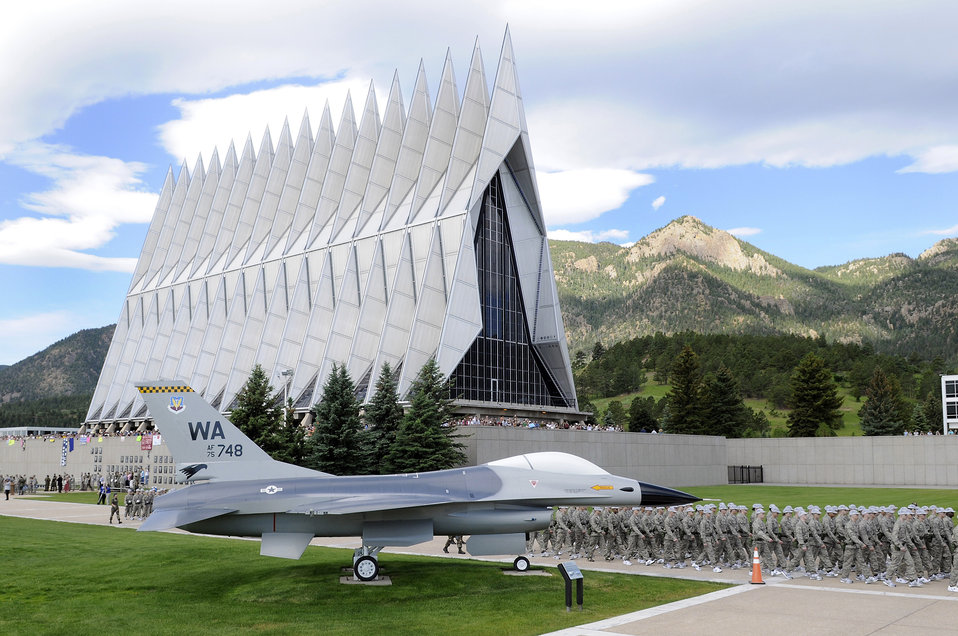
Welcome to the Academy

The 1,376 members of the Class of 2013 are dismissed after reciting the Oath of Allegiance in front of the cadet chapel, family and friends during their first formation June 26 at the U.S. Air Force Academy in Colorado Springs, Colo.